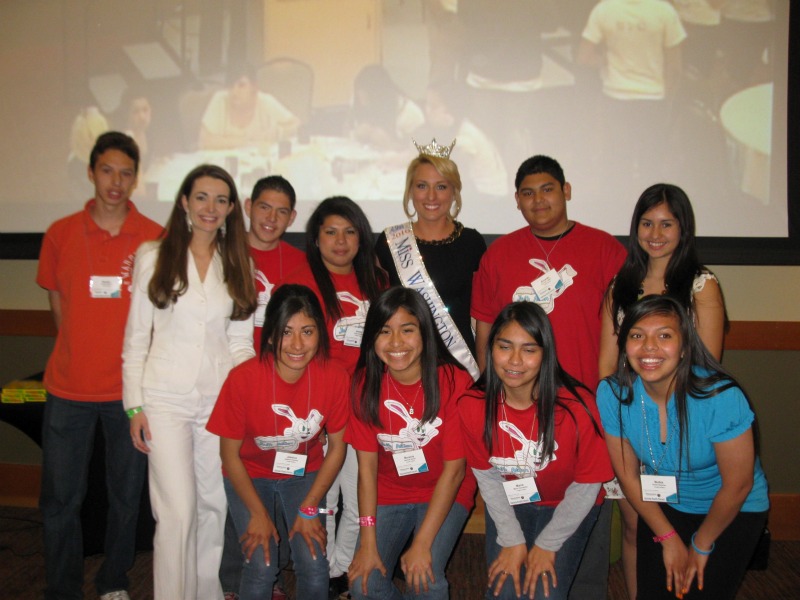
Washington's Youth Action NDFW 2013

Quincy, Wash., The Youth Action students received a scholarship to the Spring Youth Forum held by the Attorney General’s office for the state of Washington to come and and present their information from “National Drug Facts Week.' They competed against 42 other youth teams across the state. During “National Drug Facts Week,” the Youth Action students presented to 7th grade classrooms shattering myths that students had about drugs and drug abuse.